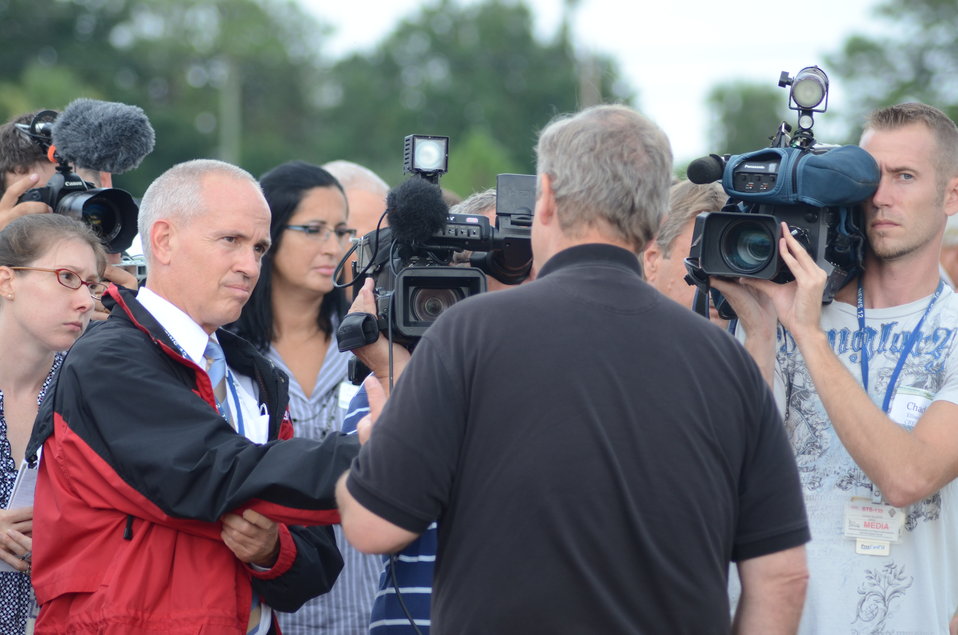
Agriculture Secretary Tom Vilsack visited the waste-to-energy bioprocessing facility under construction in Florida today to announce several small grants to support research into renewable fuels. The INEOS New Planed BioEnergy facility in Vero Beach, Florida, was granted a conditional Agriculture loan guarantee earlier this year to help build and operate a biorefinery capable of producing 8 million gallons per year of cellulosic ethanol and 6 megawatts of electricity.